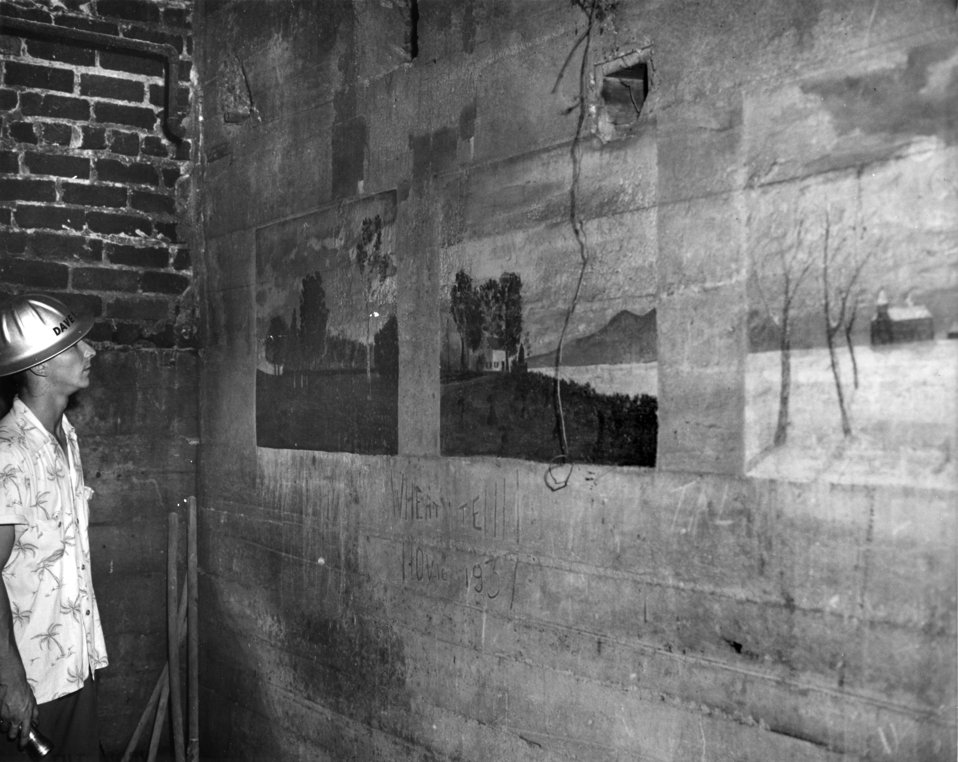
Painting of Wheat School by Edgar Ward 1940 Oak Ridge

MED-291B DOE photo Ed Westcott 1940 Oak Ridge Tennessee